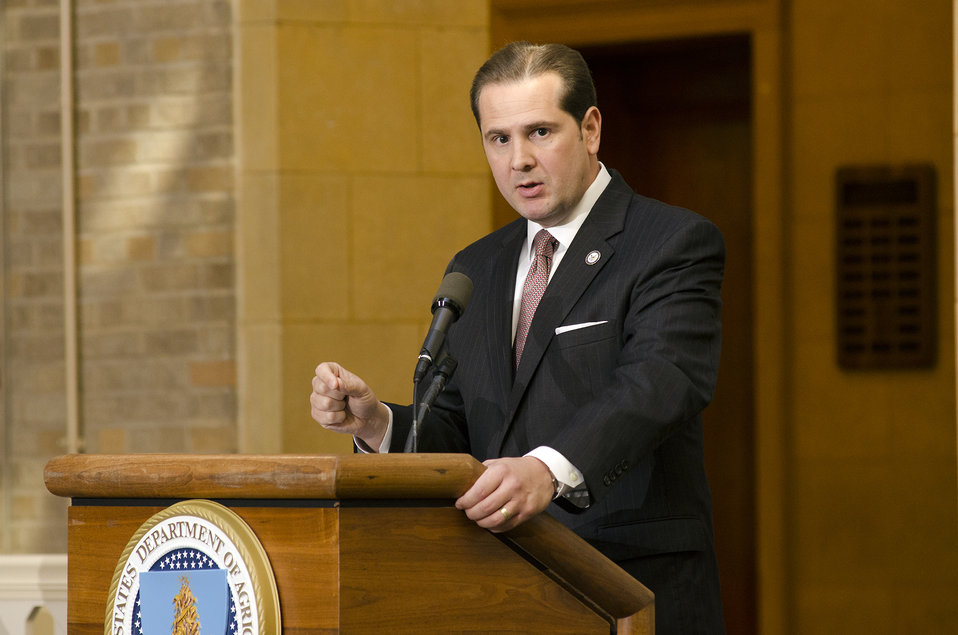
Delta Regional Authority Federal Co-Chairman Christopher Masingill speaks at the closing session of the White House Rural Forum on Regional Innovation on the patio in the Whitten Building at USDA on Thursday, Sep. 19, 2013.